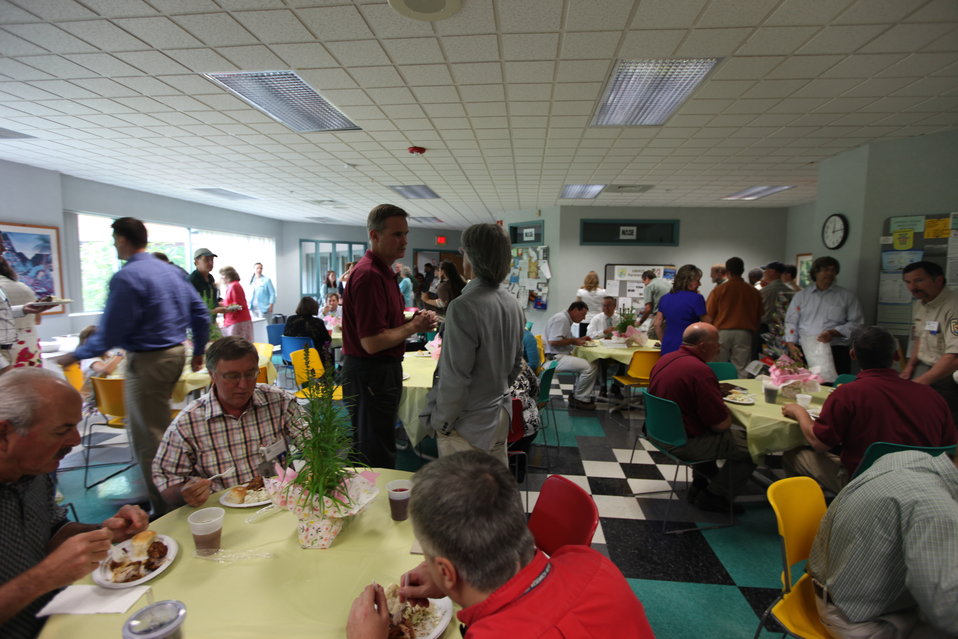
Northeast Region Employee Appreciation Awards

Luncheon